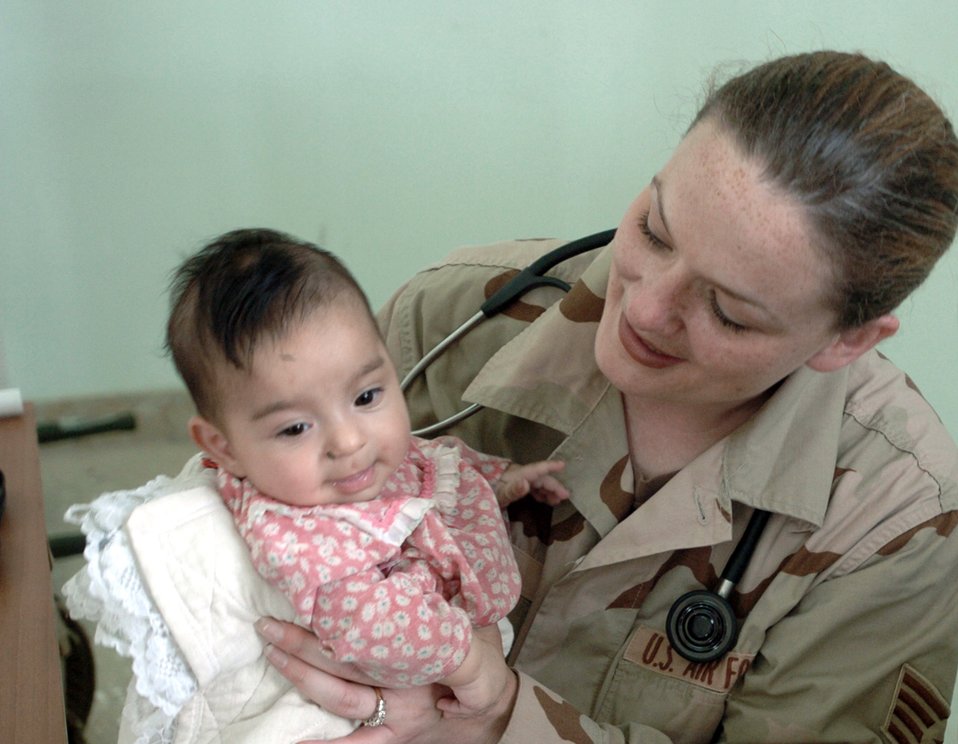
Operation Iraqi Freedom

BALAD AIR BASE, Iraq (AFPN) -- Staff Sgt. Jessica Nuyt holds an Iraqi girl during a medical civic-action project visit. A small contingent of Air Force medical people treated local villagers for minor illnesses and injuries. Sergeant Nuyt is an independent-duty medical technician with the 332nd Expeditionary Medical Squadron here, and is deployed here from the 41st Rescue Squadron at Moody Air Force Base, Ga.